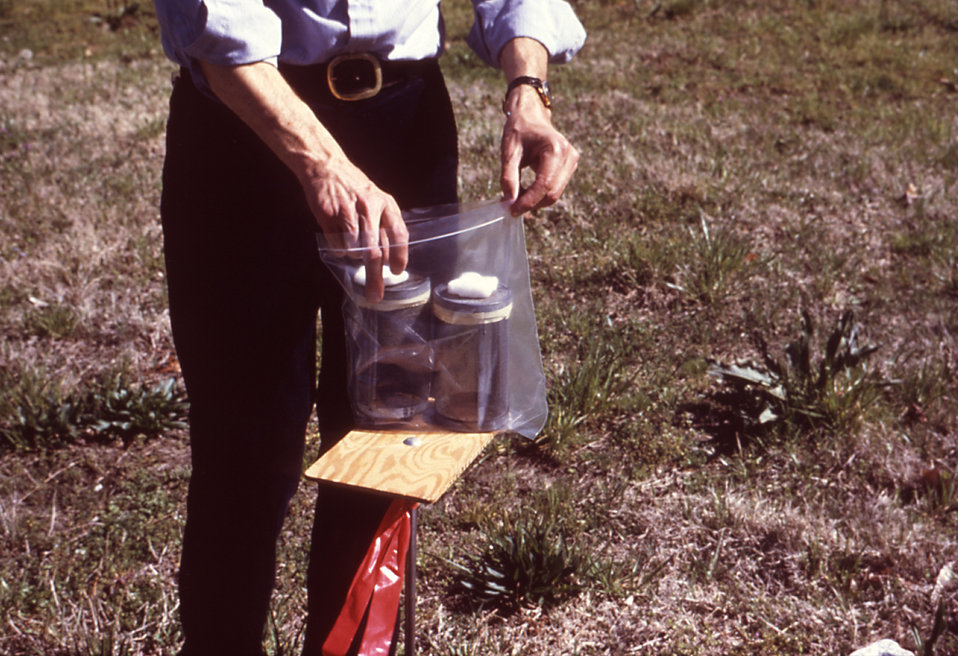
This 1981 photograph depicted the second of two bioassay capture cages being loaded into a plastic bag, which was then shipped after having been used to collect a catch of mosquitoes from the environment.